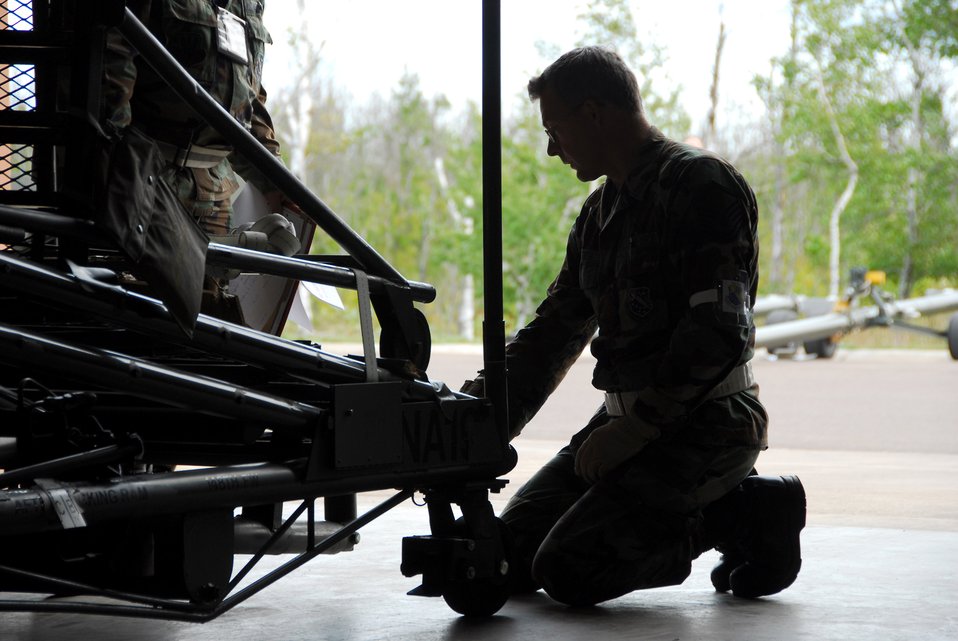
Almost ready

Master Sgt. Bert Spaeth gets equipment ready Sept. 13 for an upcoming operational readiness exercise. Sergeant Spaeth is with the Minnesota Air National Guard's 148th Fighter Wing in Duluth.